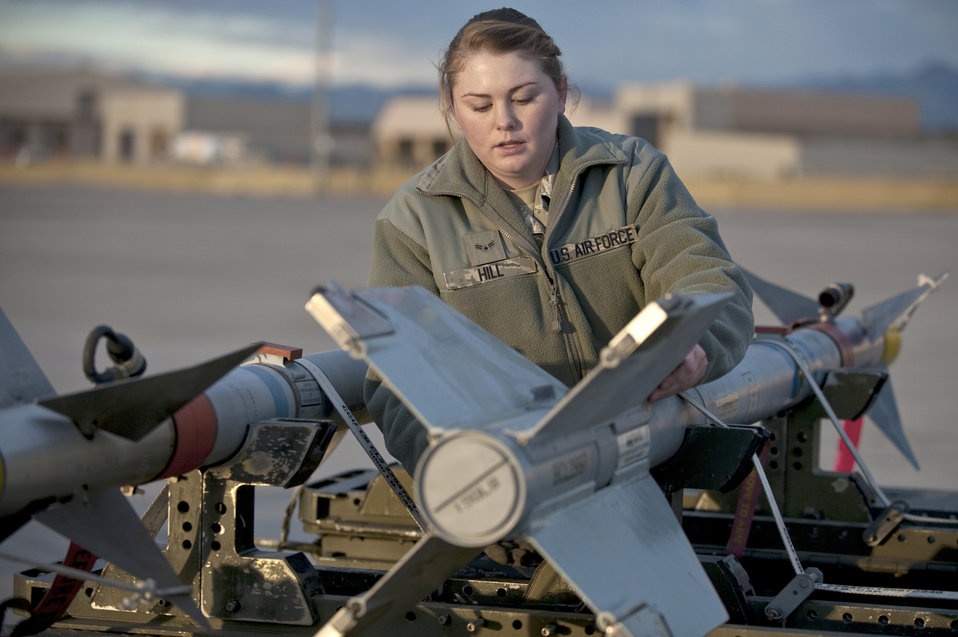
Nellis weapons load competition

Airman 1st Class Ashley Hill conducts pre-load checks on an AIM-9 air-to-air missile during a weapons load competition Jan. 7, 2011, at Nellis Air Force Base, Nev. Weapons load competitions are conducted quarterly to keep Airmen sharp and recognize superior performers. Weapons load teams are evaluated for their use of the checklist, safety and overall speed. Airman Hill is an aircraft armament systems apprentice with the 57th Aircraft Maintenance Squadron.